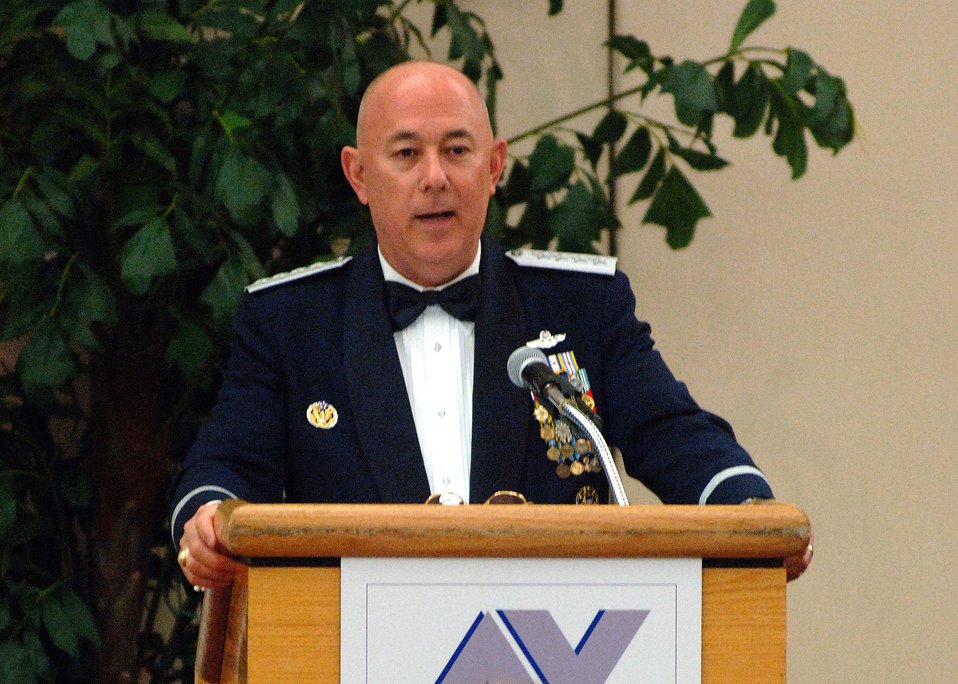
General tributes Air Force Villages

Air Force Chief of Staff, General T. Michael Moseley speaks at the Air Force Villages dinner Oct. 20, 2006 at Lackland Air Force Base, Texas. The Villages offer premier active living communities for retired and honorably seperated officers and their spouses, widows and widowers over the age of 62.